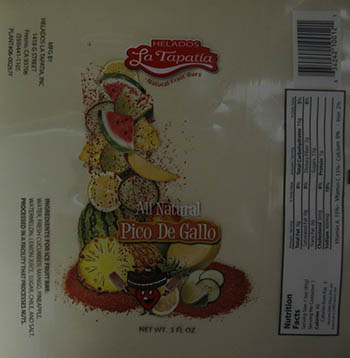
RECALLED – Ice cream products

March 19, 2014 – Product Recall – Helados La Tapatia, Inc. Recalls Products Because of Possible Health Risk.